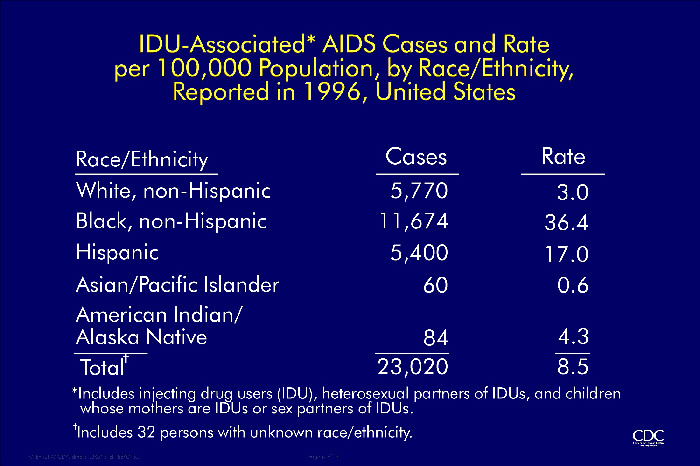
IDU-Associated AIDS Cases and Rate per 100,000 Population by Race/Ethnicity, Reported in 1996, United States